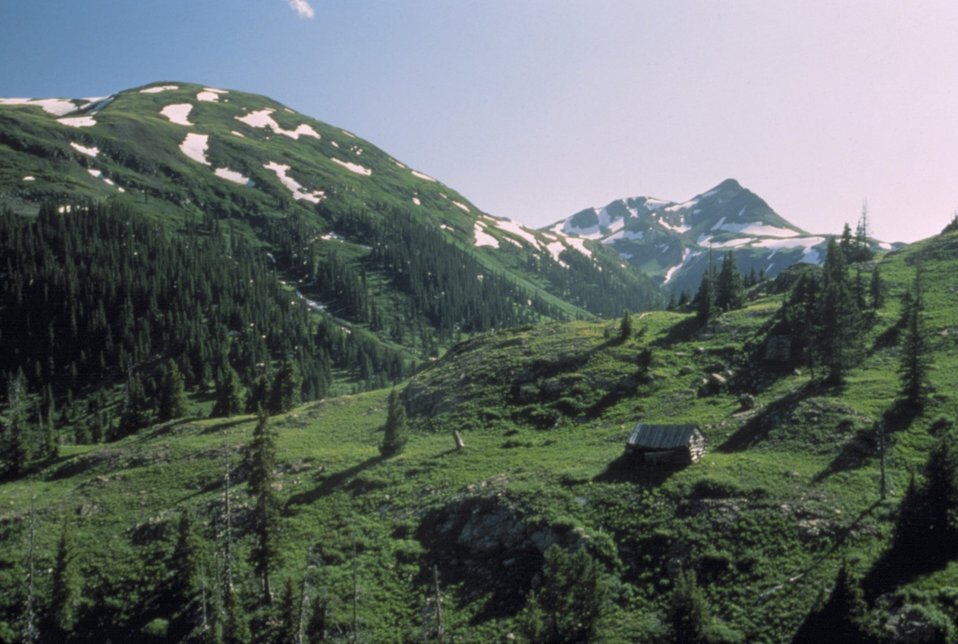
Old log cabin